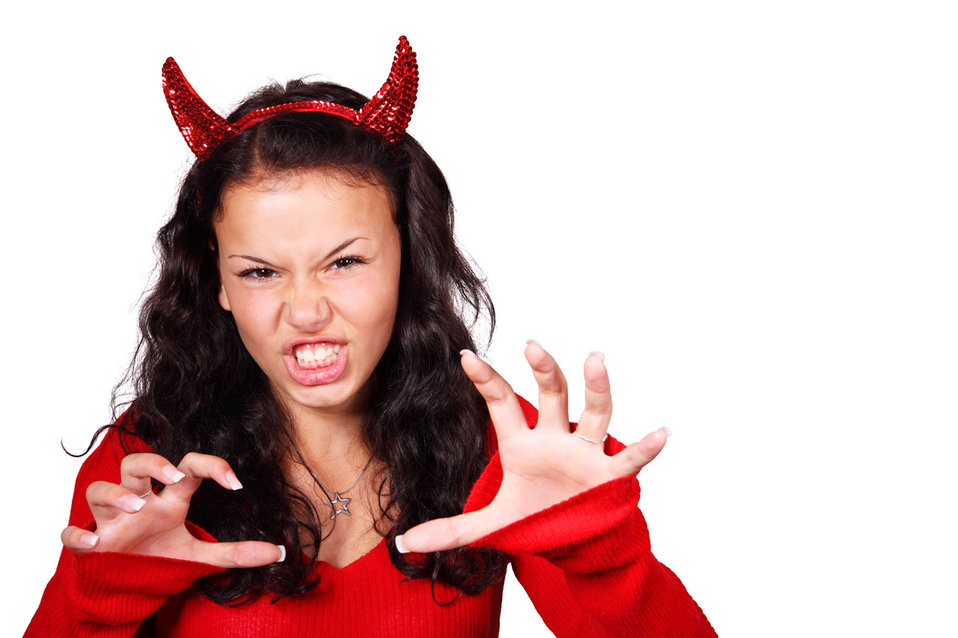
Aggressive devil

Aggressive female devil isolated on white background.